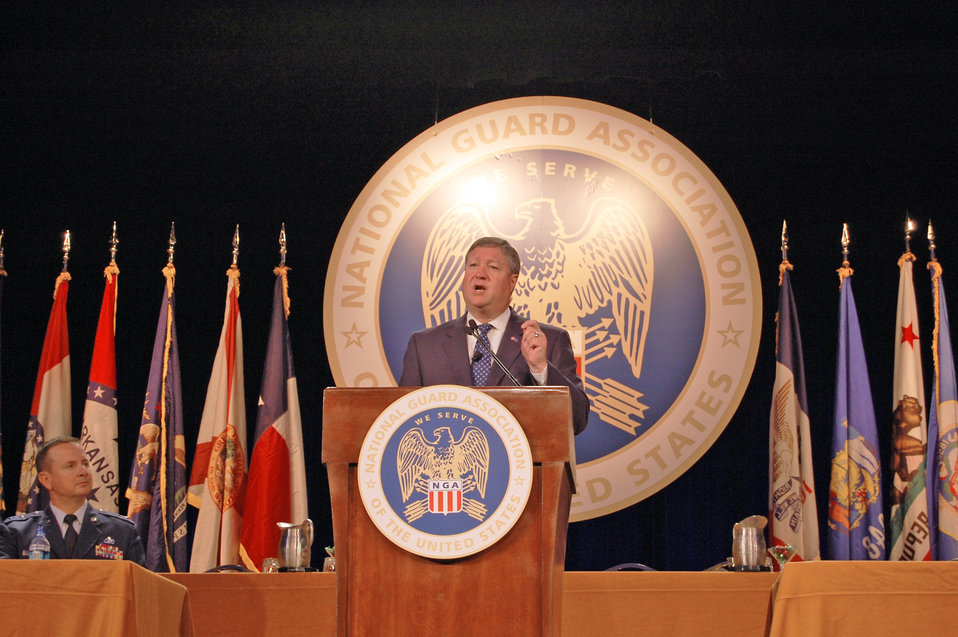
SecAF at NGAUS

Secretary of the Air Force Michael Donley speaks at the 131st annual National Guard Association of the United States conference in Nashville, Tenn., Sept. 11, 2009.